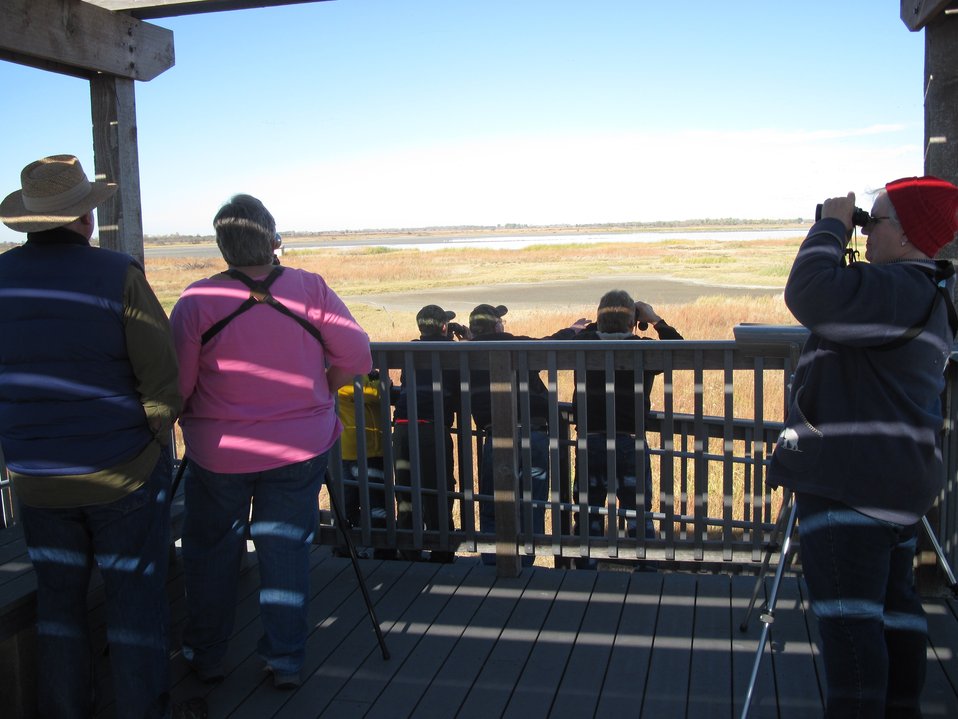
Quivira National Wildlife Refuge

The viewing deck at Quivira NWR provides bird watchers with great opportunities to view the endangered whooping crane without disrupting its habitat.